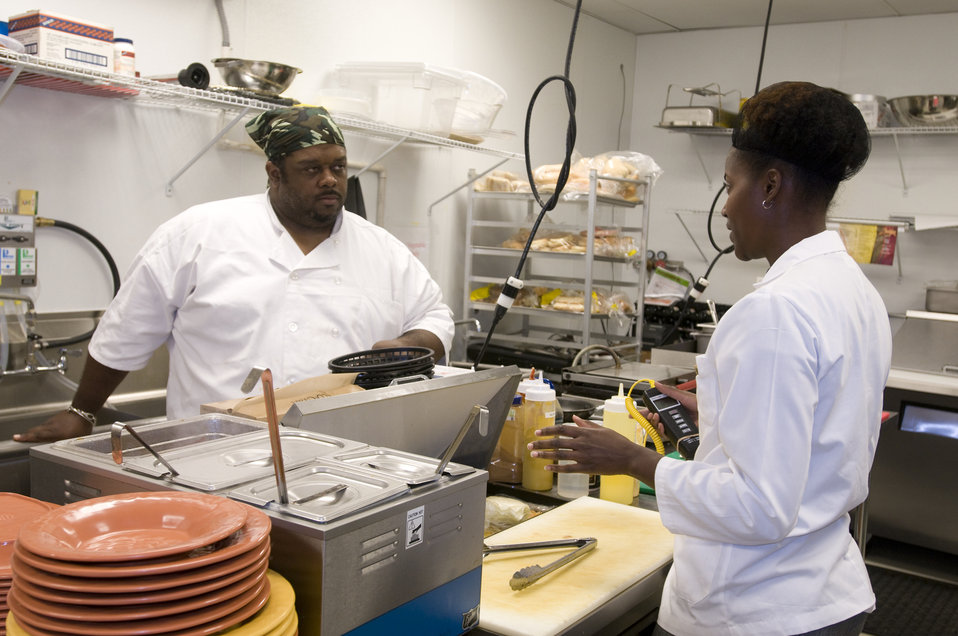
The state-appointed public health inspector pictured here, was discussing her findings, and providing feedback to one of this kitchen's employees.